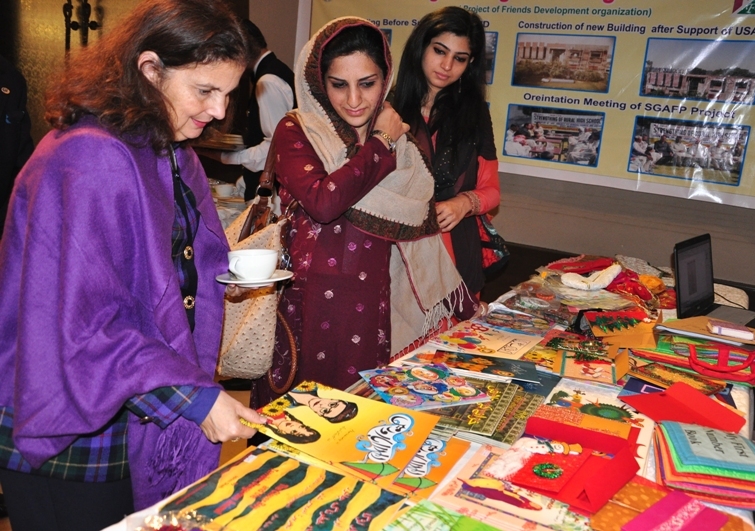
U.S. Consul General Nina Fite at the workshop.